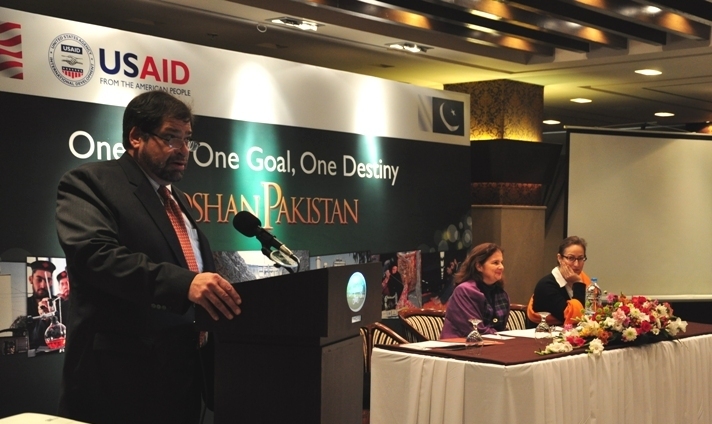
Education Workshop 135